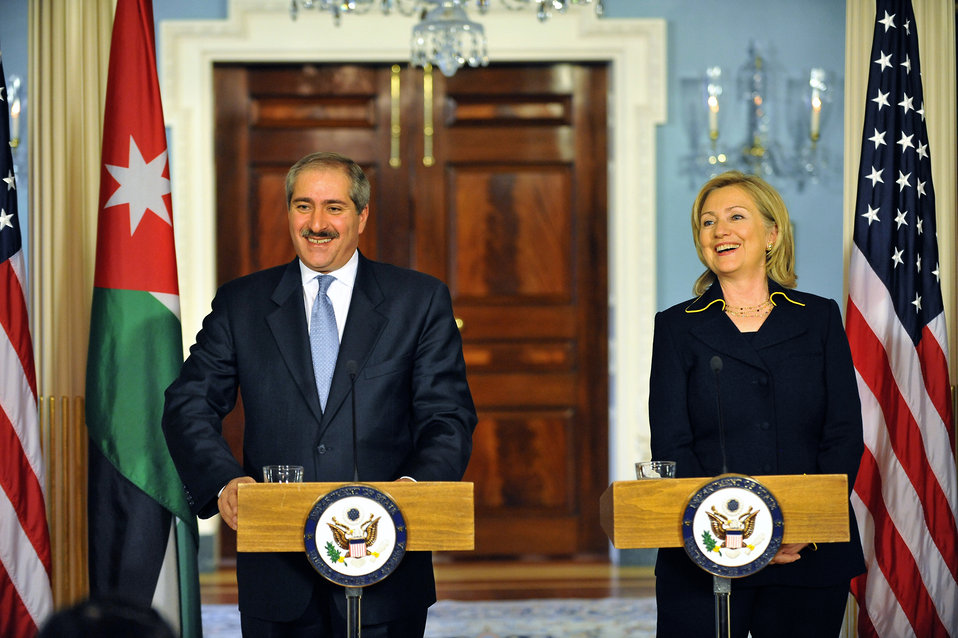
Secretary Clinton and Jordanian Foreign Minister Judeh Deliver Remarks

U.S. Secretary of State Hillary Rodham Clinton and Jordanian Foreign Minister Nasser Judeh deliver remarks in a joint press conference at the U.S. Department of State in Washington, D.C., on January 26, 2011.